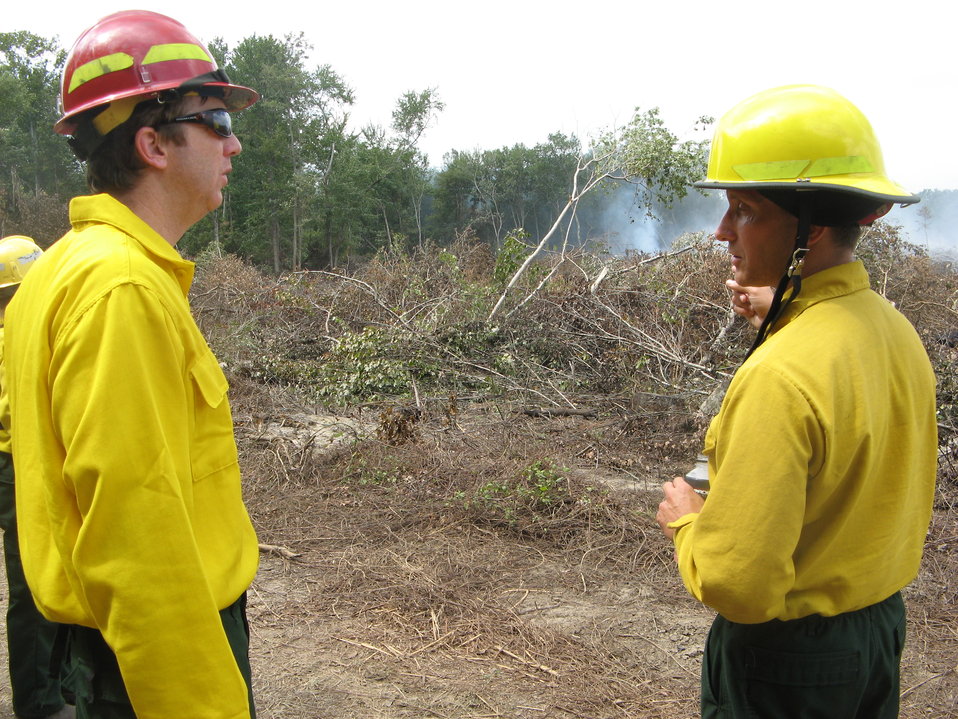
Dismal Swamp State Park fire

Suffolk, VA, August 2011: North Carolina State Parks employee Jay Greenwood (right) shows North Carolina Department of Environment and Natural Resources Secretary David McKnight the 43-acre Bull North sopt fire on Dismal Swamp State Park. About 200 acres of Park land burned in the 6,300-acre Lateral West Fire. Most of the fire was on Great Dismal Swamp National Wildlife Refuge.